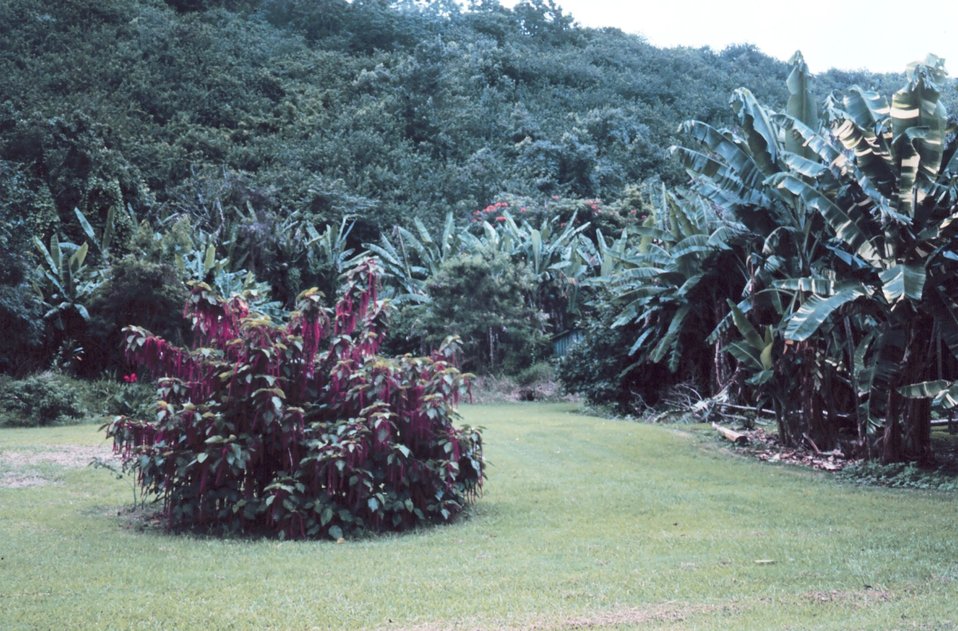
Hawaiian tropical plants